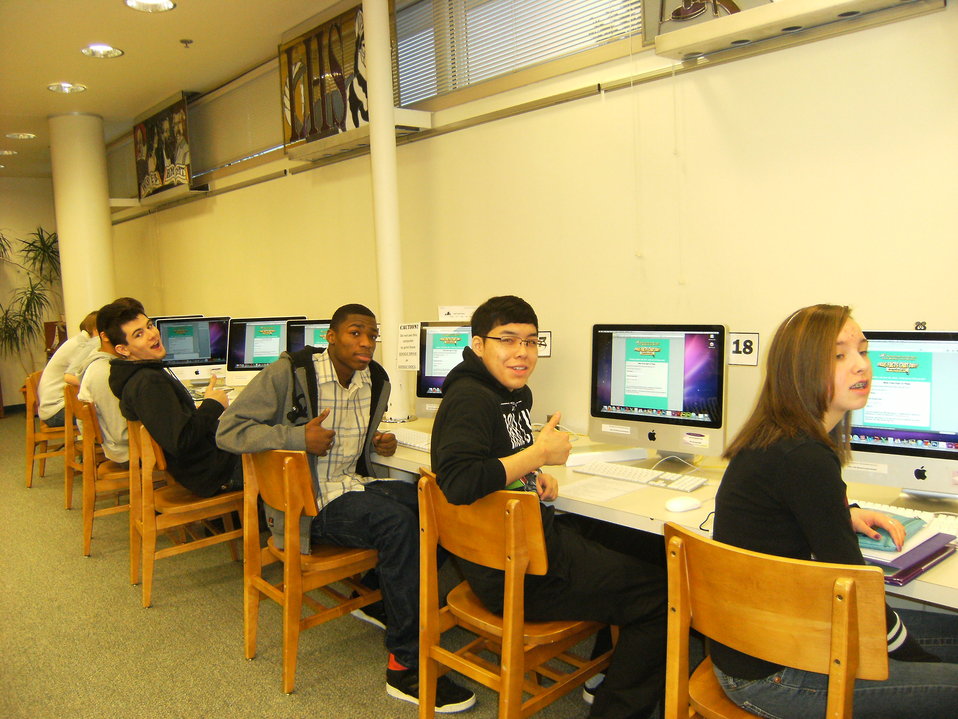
Chat Day - Alaska